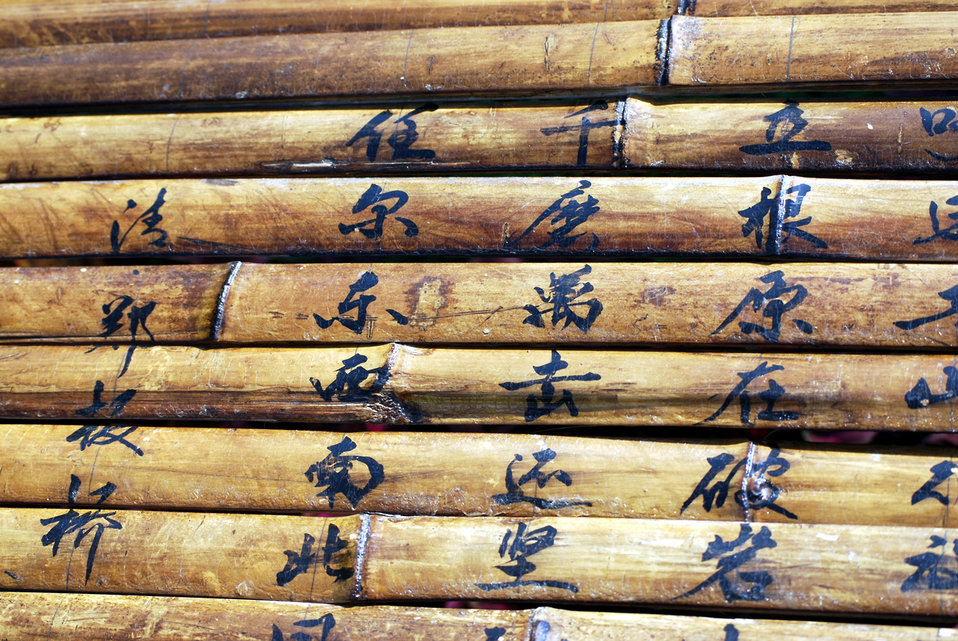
Bamboo book

Chinese bamboo book.